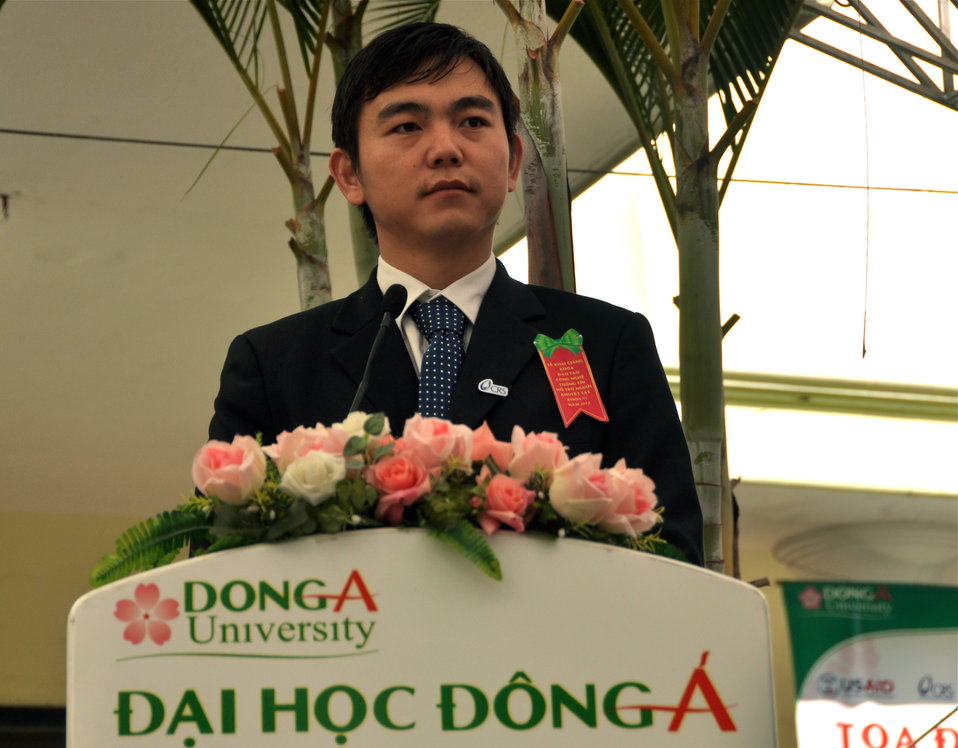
New class of students starts at Dong A Univeristiy with support from USAID and CRS

CRS Representative Chengguang Zhao, speaks at the ceremony in Danang.

Photo: @USAIDVietnam
December 3, 2012

December 3, 2012